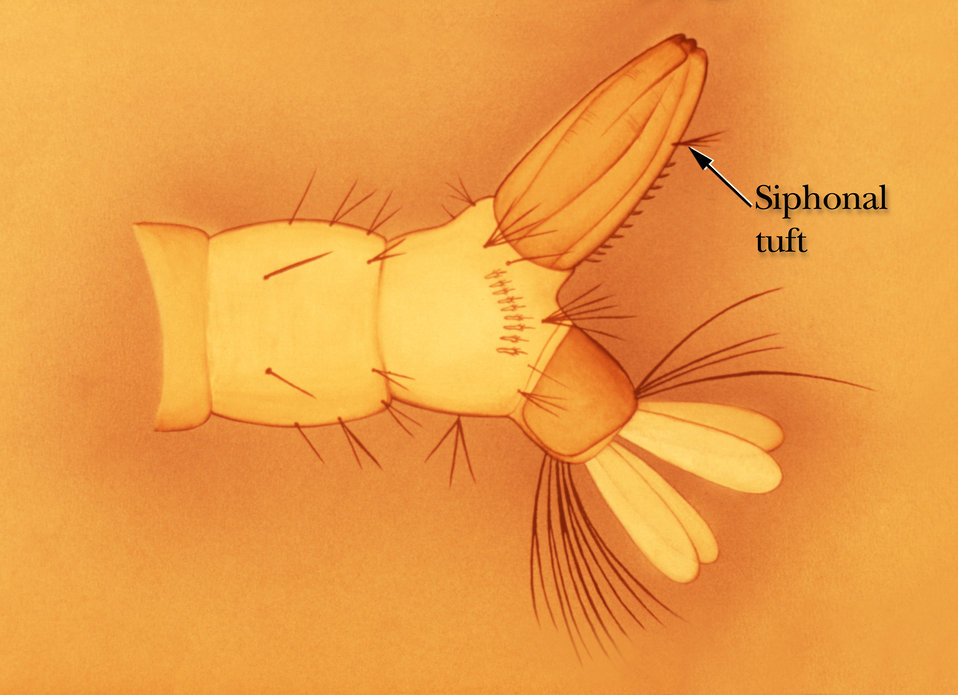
An illustration identifying the siphonal tuft of the Aedes, Uranotaenia or Psorophora mosquito larvae.